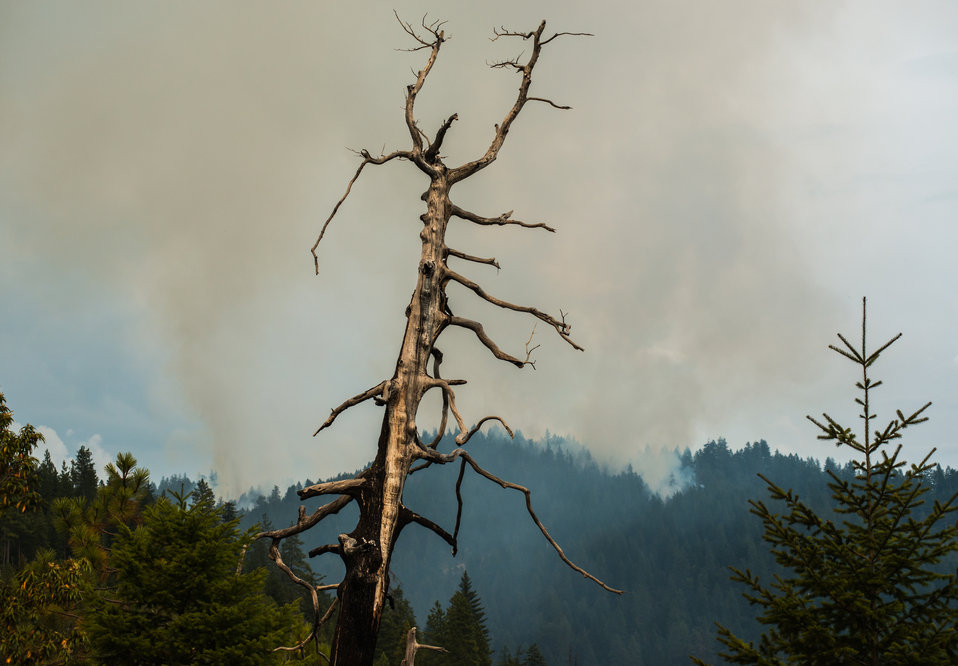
Big Windy Complex Wildlands Fire, 15 miles west of Interstate-5 and East Northeast of Galice, Oregon, with the Incident Command Post (ICP) in Merlin, OR on Friday, Aug 9, 2013.